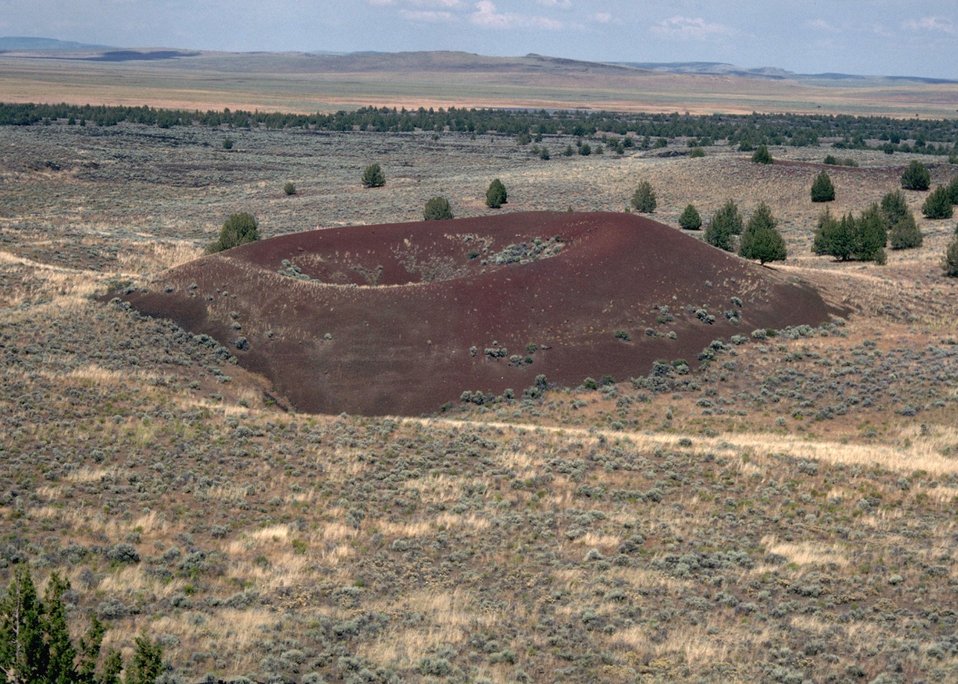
Little Red Cone at Diamond Craters, an Outstanding Natural Area in Southeastern Oregon